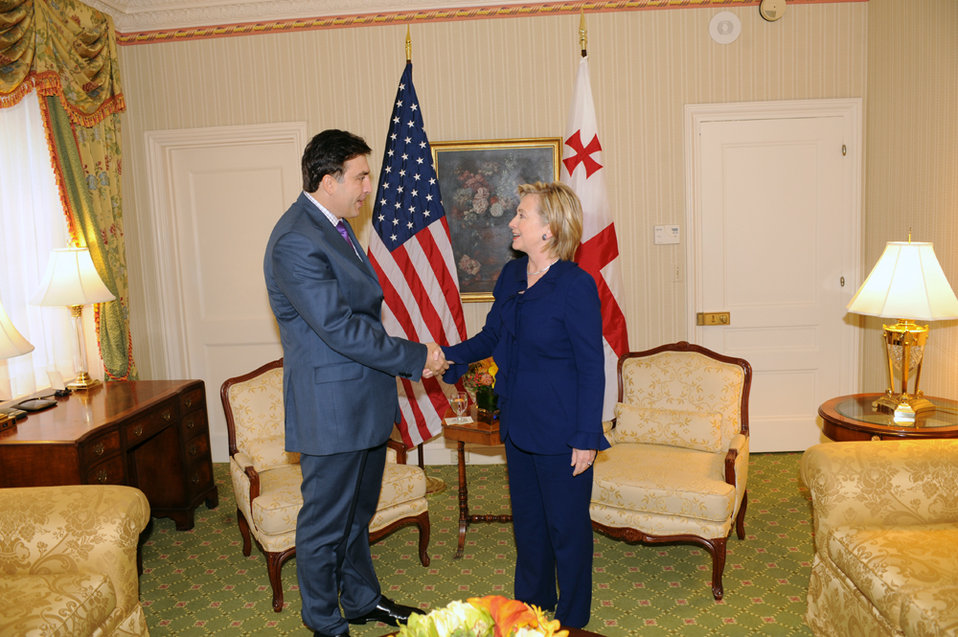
UNGA 2009: Secretary Clinton Meets With Georgian President

U.S. Secretary of State Hillary Rodham Clinton meets with Georgian President Mikheil Saakashvili at the Waldorf Astoria hotel during the 64th Session of the UN General Assembly in New York City, New York September 21, 2009.